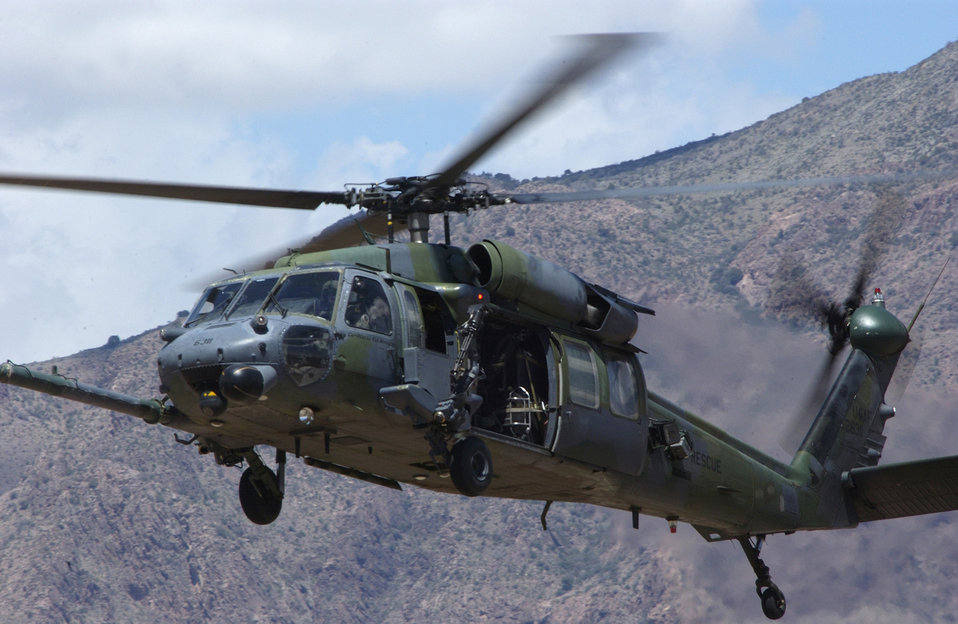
It's all live

FORT BLISS, Texas -- An HH-60G Pave Hawk makes an approach during a live-fire training exercise here April 9. The exercise was part of the 57th Wing Weapons School intensive five and one-half month training program. The HH-60 is assigned to the 66th Rescue Squadron at Nellis Air Force Base, Nev.